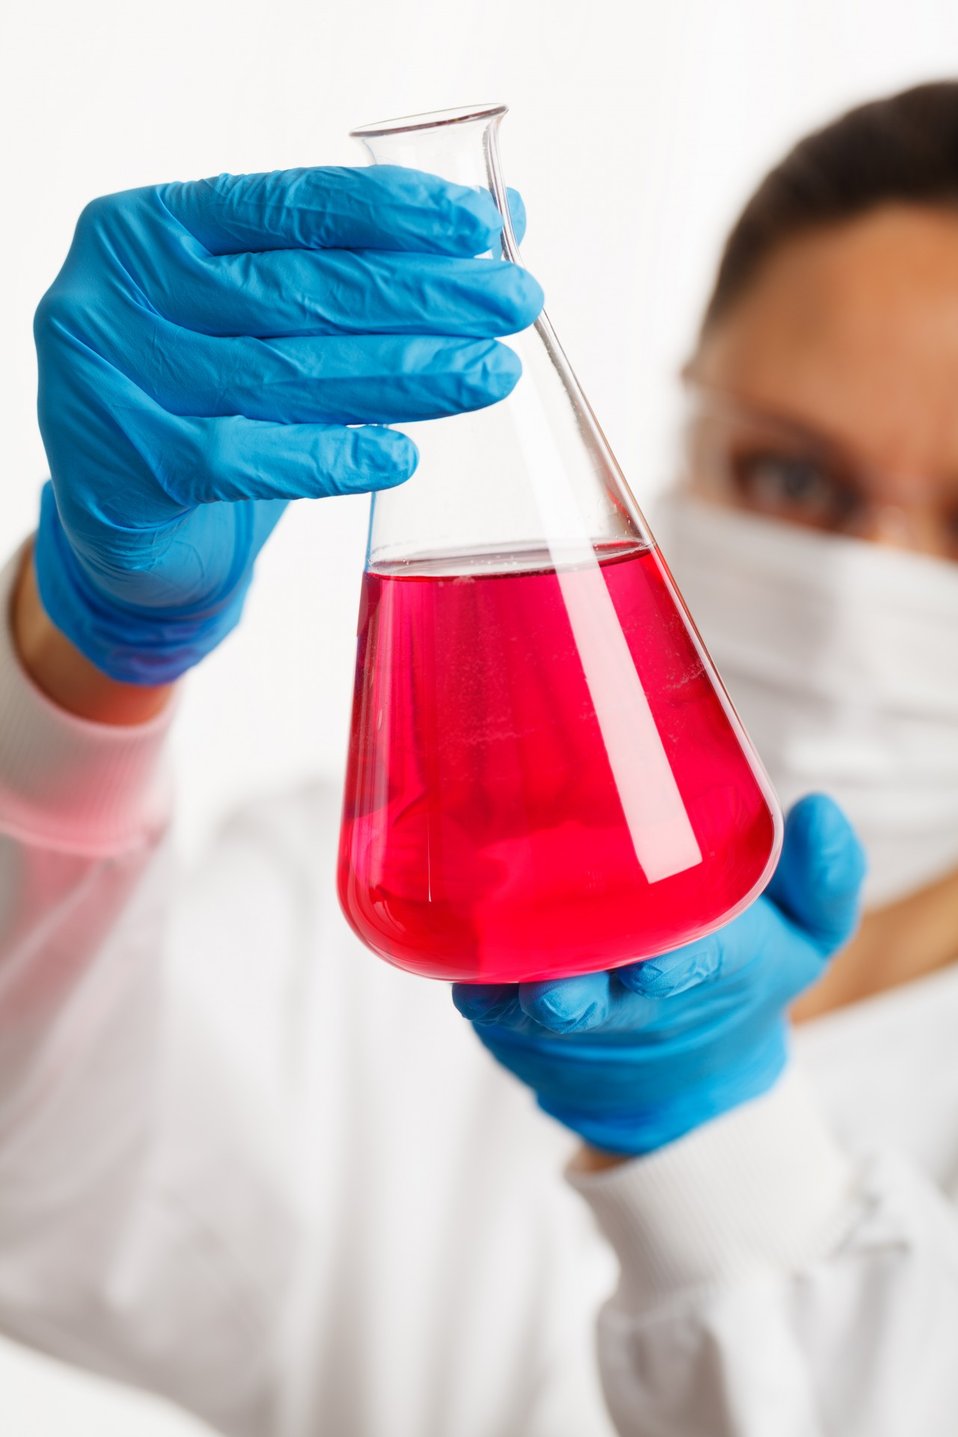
Scientist with erlenmeyer flask

Scientist holding an erlenmeyer flask with pink liquid.